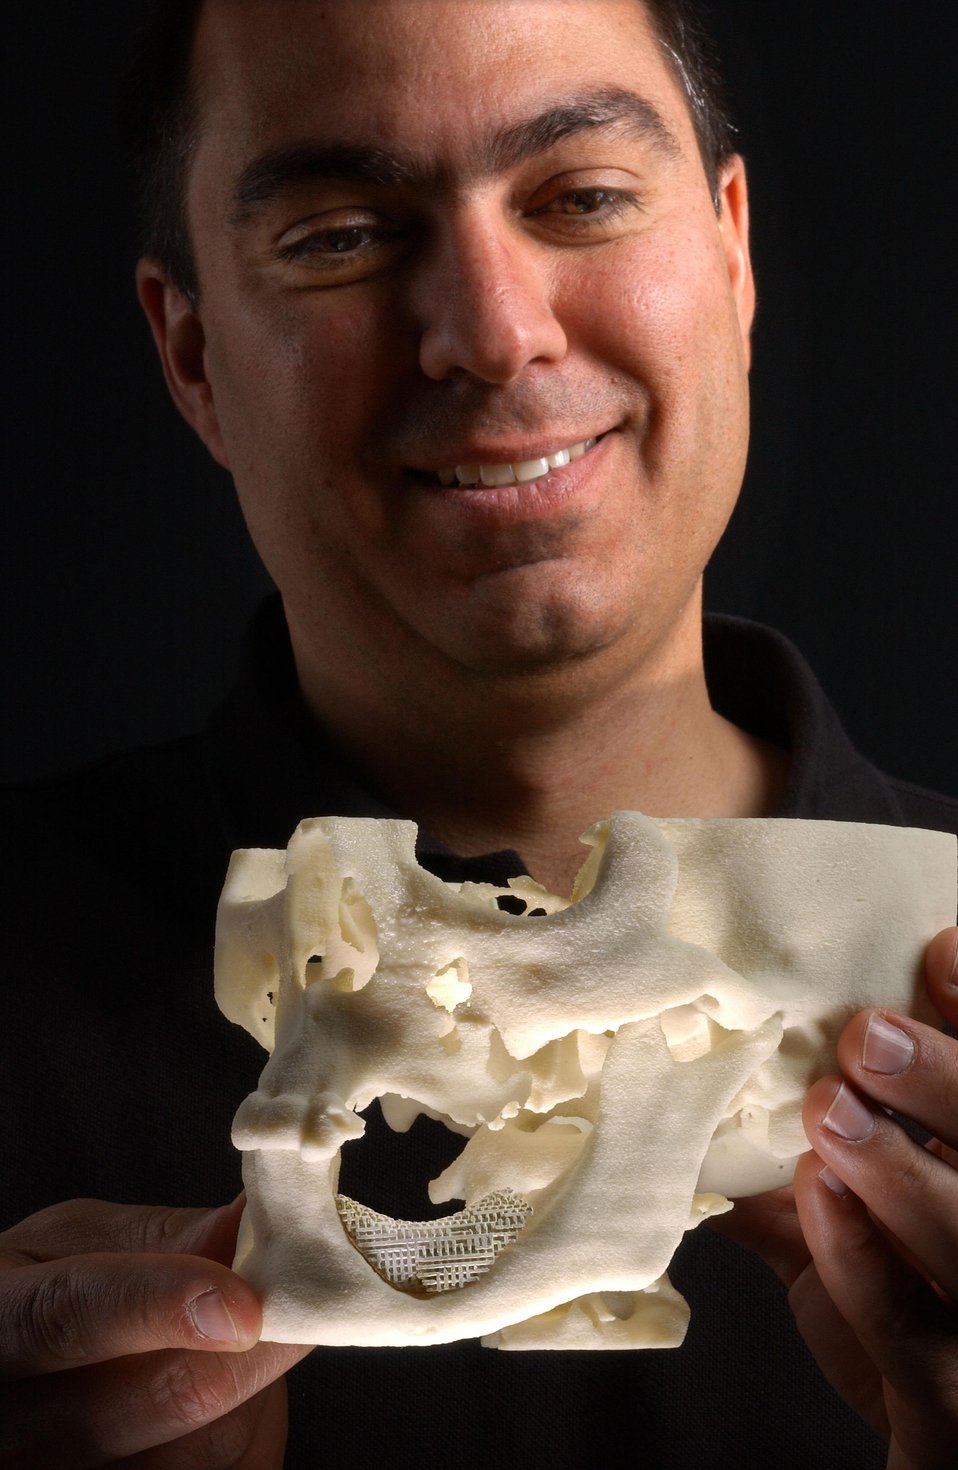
SANDIA NATIONAL LABORATORIES RESEARCHER JOE CESARANO HOLDS ROBOCASTED IMPLANT SET IN THE JAWBONE OF A MANUFACTURED SKULL.

RESEARCHERS FROM SNL AND THE UNIVERSITY OF ILLINOIS HAVE DEVELOPED A CERAMIC MATERIAL THAT SURGEONS CAN USE TO REPLACE DAMAGED OR MISSING BONE. THE STRONG LATTICE-LIKE STRUCTURE ALLOWS NEW BONE CELLS AND BLOOD VESSELS TO GROW THROUGH IT WHILE IT SERVES AS A TEMPORARY SUPPORT STRUCTURE FOR THE MISSING BONE.